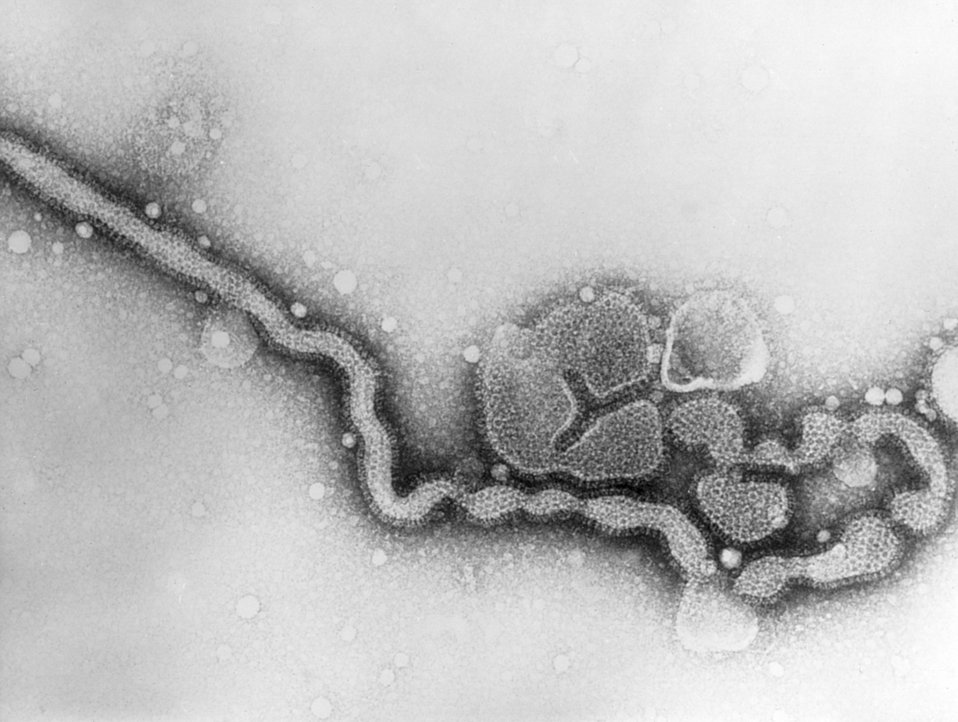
This transmission electron micrograph (TEM) depicted the influenza C virus.